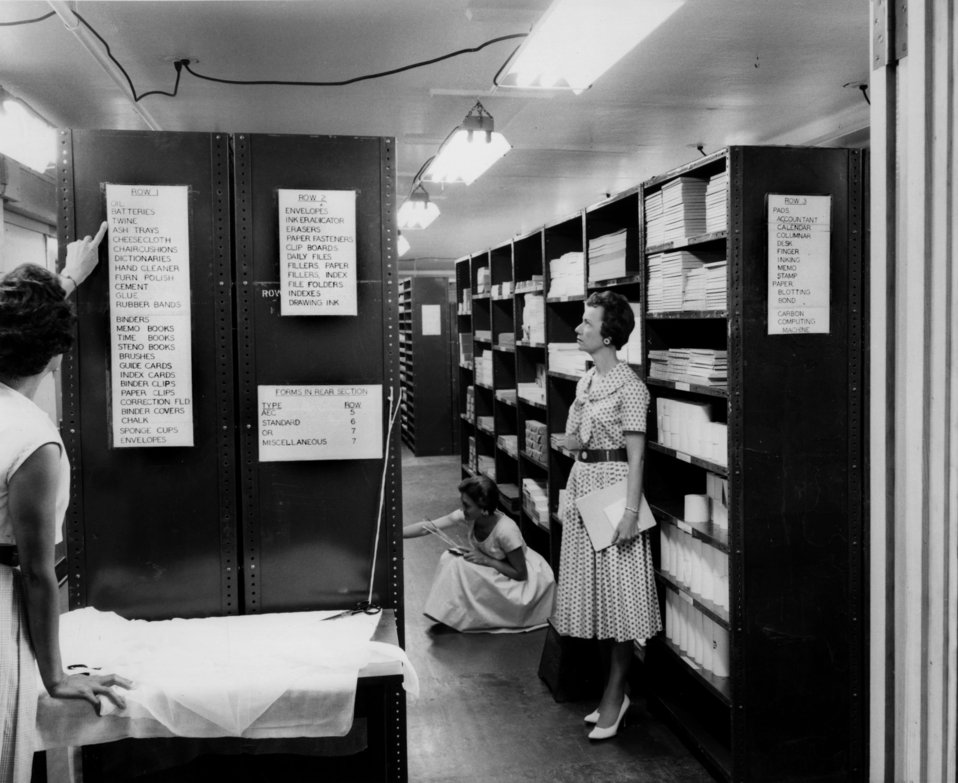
Stock Room Self Service AEC Adm. Bld. Oak Ridge

59-0391 DOE photo by E.D. Mitchell 6-19-1959 Oak Ridge Tennessee